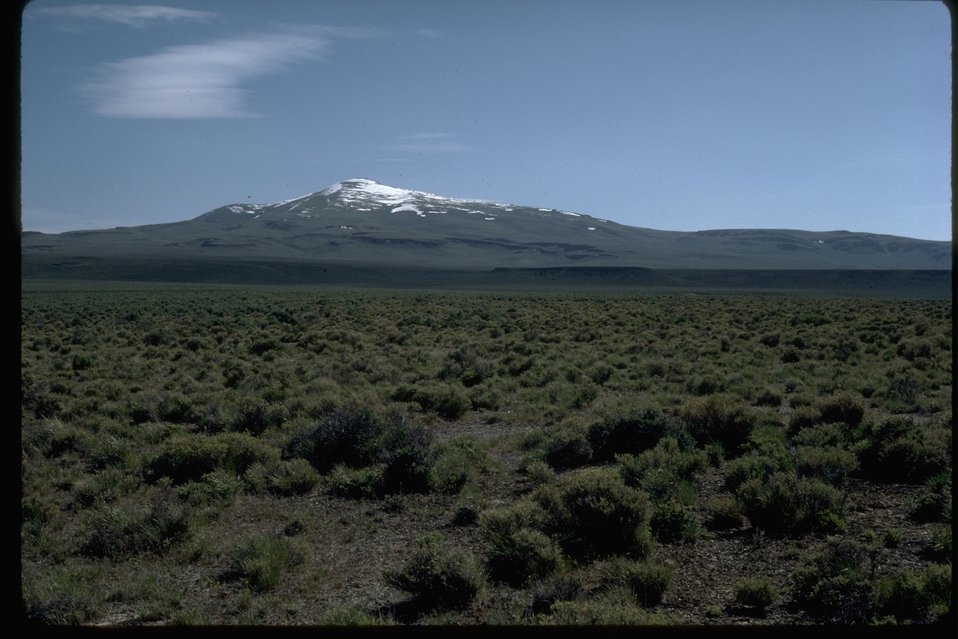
High desert landscape in Lake County.